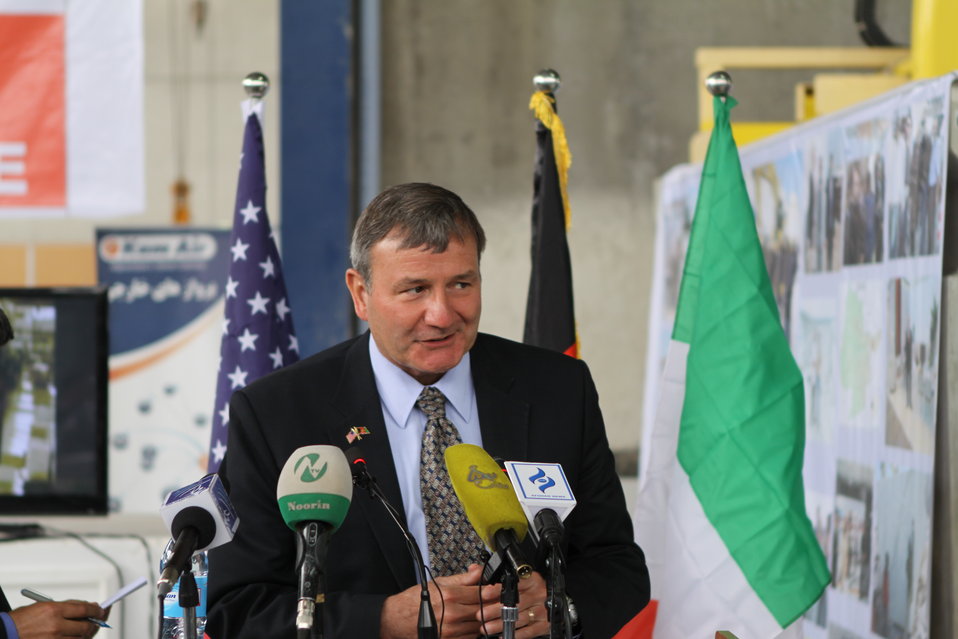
100525 Hirat Marble Conference 221